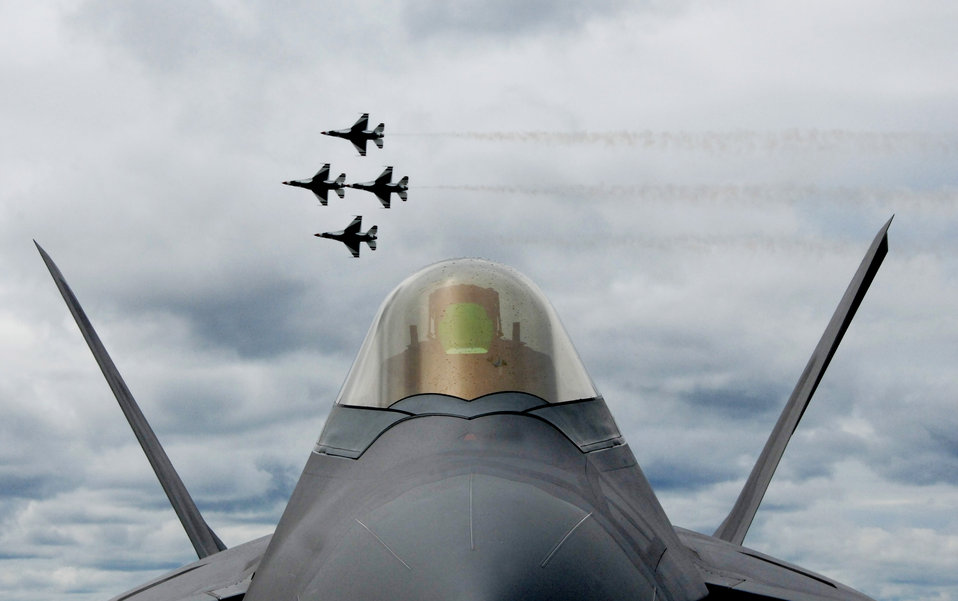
Thunderbirds 'Soar into Solstice' at Eielson

Four Air Force Thunderbird F-16 Fighting Falcons fly together in formation behind an F-22 Raptor for more than 6,000 spectators during the June 24 airshow at Eielson Air Force Base, Alaska. The